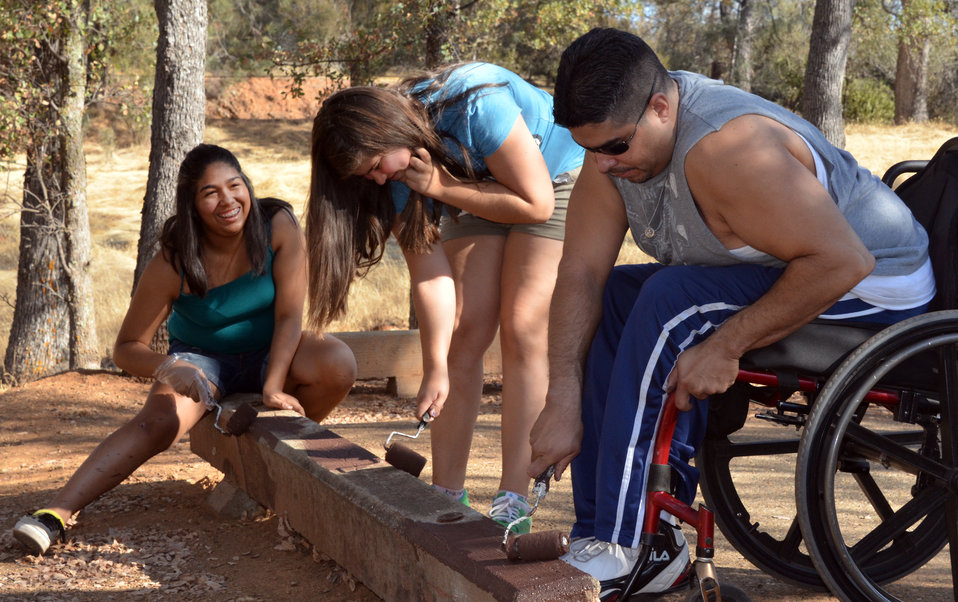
A new coat for fall (National Public Lands Day 2012)

Vince Serna, along with his daughter Kassandra (left) and family friend Skylar, paint a parking strip at New Hogan Lake during National Public Lands Day, Sept. 29, 2012. U.S. Army Corps of Engineers park staff and an army of volunteers celebrated the day with park improvement projects, camaraderie and food.